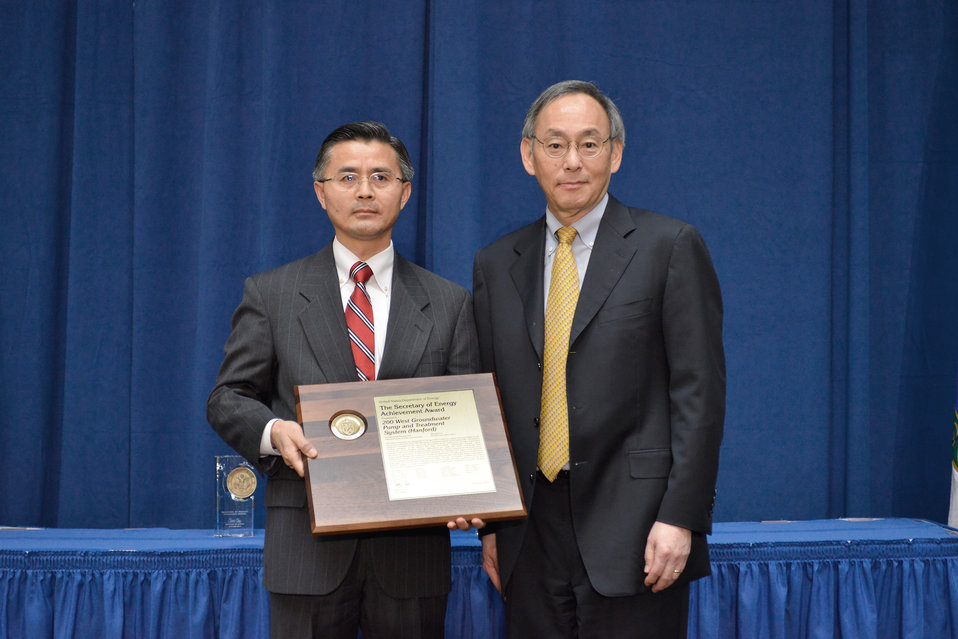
200 West Groundwater Pump and Treatment System (Hanford)

Awardees (not all pictured): Brian A. Biro, Mark E. Byrnes, Briant L. Charboneau, Michael W. Cline, Jenise C. Connerly, Mike Dewitt, Kent Dorr, Kevin Elliot, Bryan L. Foley, Dyan Foss, Terri Y. Hale, Tom W. Halecki, C. Sue Harp, Michael Harrington, John G. Morse, Mike J. Ostrom, Delise L. Pargman, Robert S. Popielarczyk, Sally A. Simmons, Lisa K. StrakaI, Arlene C. Tortoso, Mark E. Whitson, Ming Zhu. This award recognizes the Department of Energy Contractor project team responsible for the design and construction of the 200 West Pump and Treatment System at the Hanford Site. This facility is designed to remediate the five square mile groundwater plume resulting from 50 years of plutonium finishing operations at the Hanford site. Major groundwater contaminates included carbon tetrachloride, trichloroethylene, nitrates, radionuclides and metals with carbon tetrachloride levels exceeding 1000 times drinking water standards. This facility is the key component to the remedy which will restore the groundwater to drinking water standards. The 200 West Pump and Treatment System is the only Department of Energy Environmental Management facility to be awarded the leadership in Energy and Environmental Design Gold Award for design and construction. Cost of operations was also a key facility design consideration and was designed to operate as an unmanned facility. The team successfully completed the project within tight cost and schedule constraints and met the complex technical requirements for the 200 West Pump and Treatment System. This was accomplished through excellent team coordination, innovative thinking and proactive management of issues.